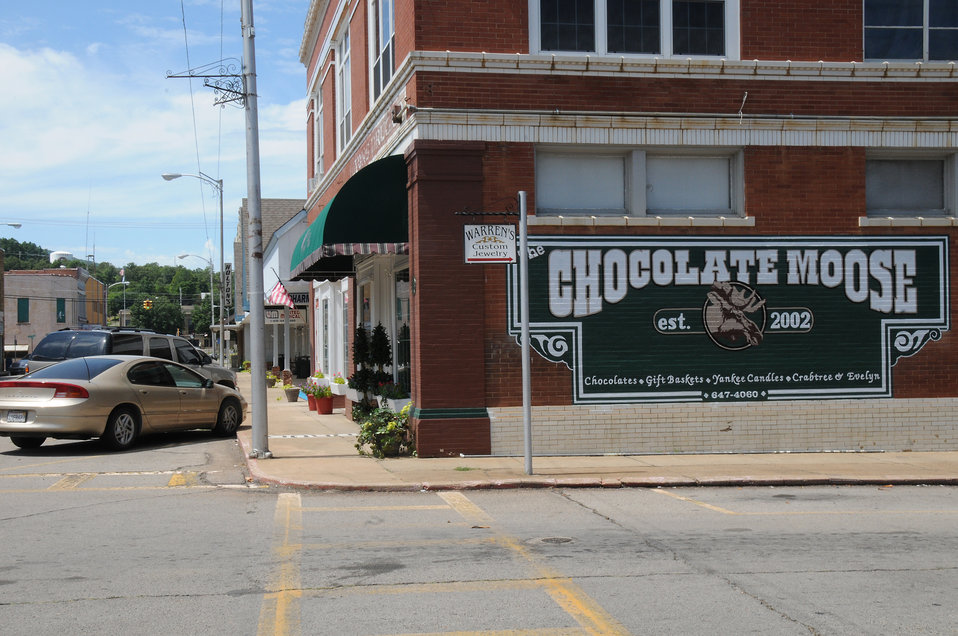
The sun shines on downtown Poteau, OK on August 11, 2009.